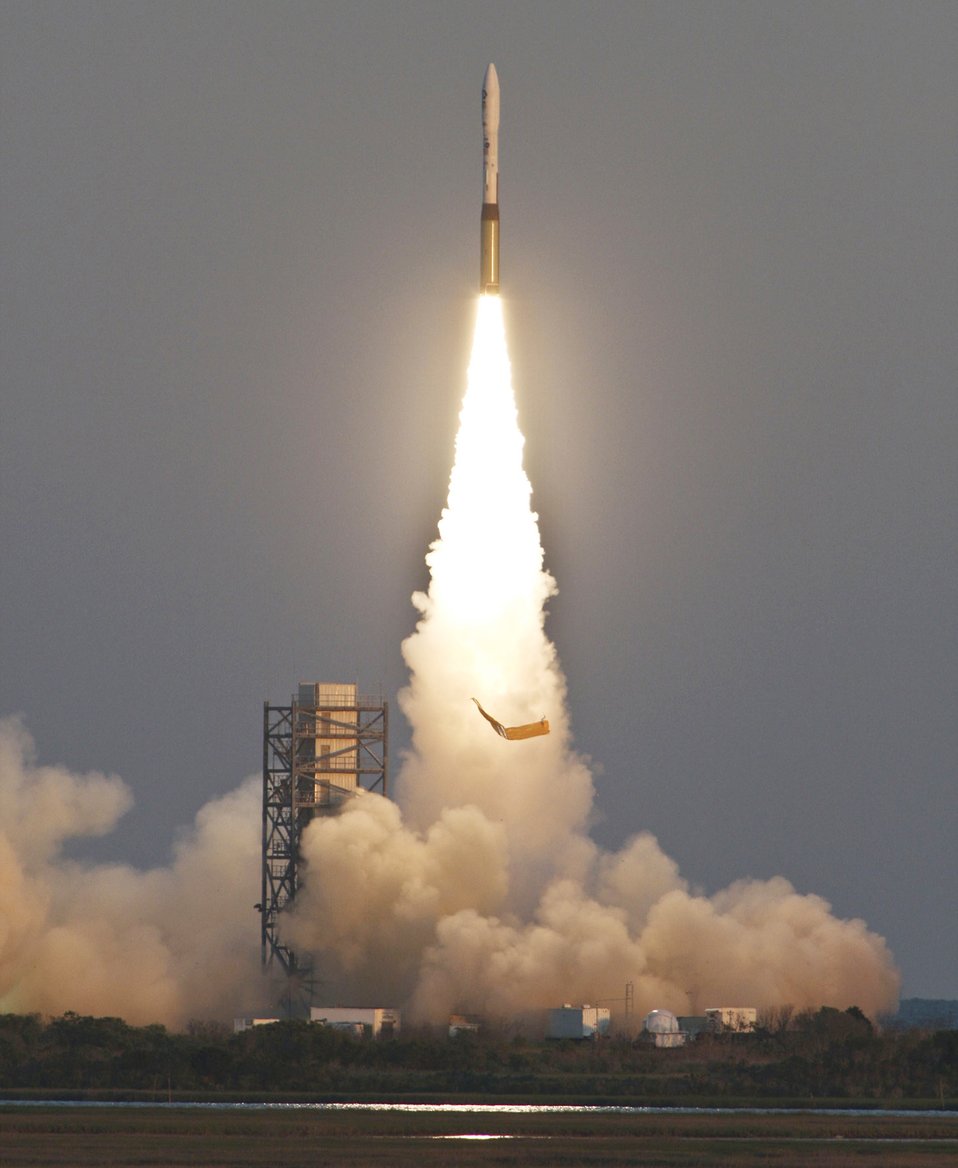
To infinity and beyond

A Minotaur I launches May 19, 2009, from the Mid-Atlantic Regional Spaceport at the NASA Wallops Flight Facility at Wallops Island, Va. The payload is a military TacSat-3 satellite.